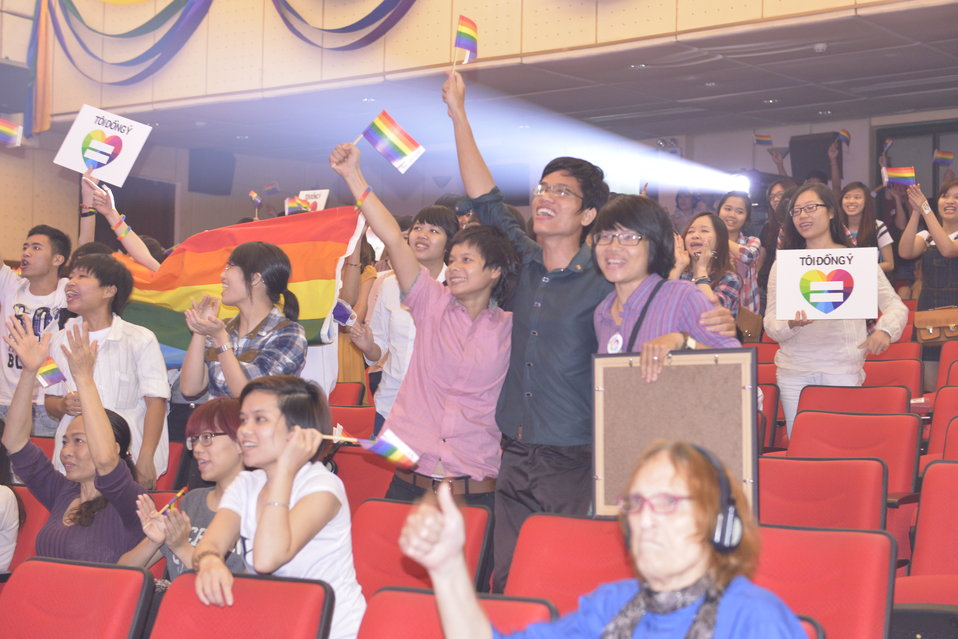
Celebration at the iSee LGBT Event

USAID Vietnam